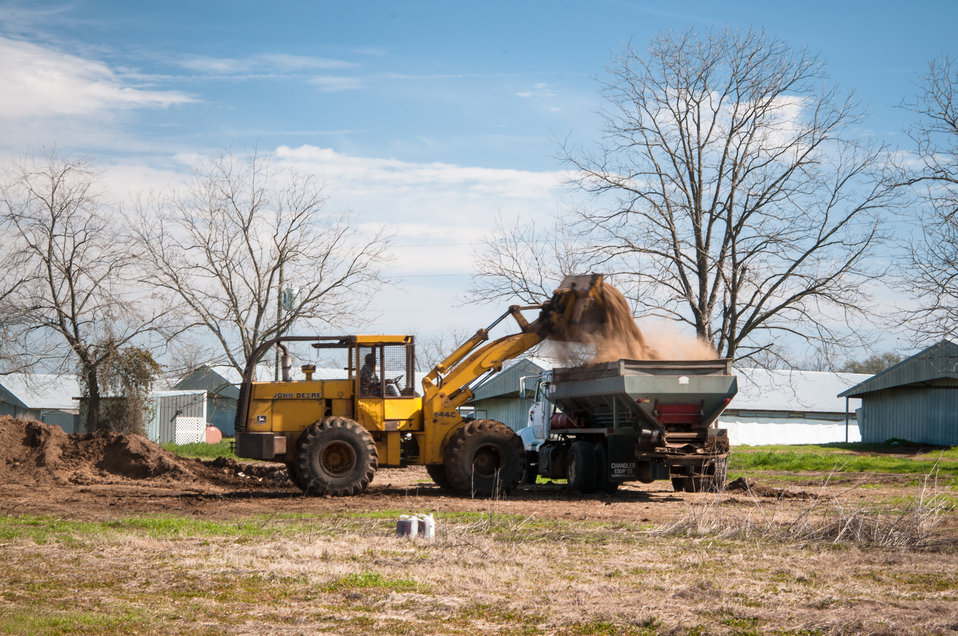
Poultry litter from AKC Poultry in Arlington, GA is loaded into a truck to be delivered to a fertilizer treatment facility on Mar. 7, 2013. AKC was able to address their nutrient management and water quality concerns with a Stackhouse to better manage poultry litter through a U.S. Department of Agriculture (USDA) Natural Resources Conservation Service (NRCS) Environmental Quality Incentives Program (EQIP) contact. Stackhouses get the poultry litter off the ground so it will not contaminate water. The USDA Strike Force Initiative has designated Baker County, GA as a Strike Force county selected to receive assistance to relieve persistent poverty in historically high-poverty counties.